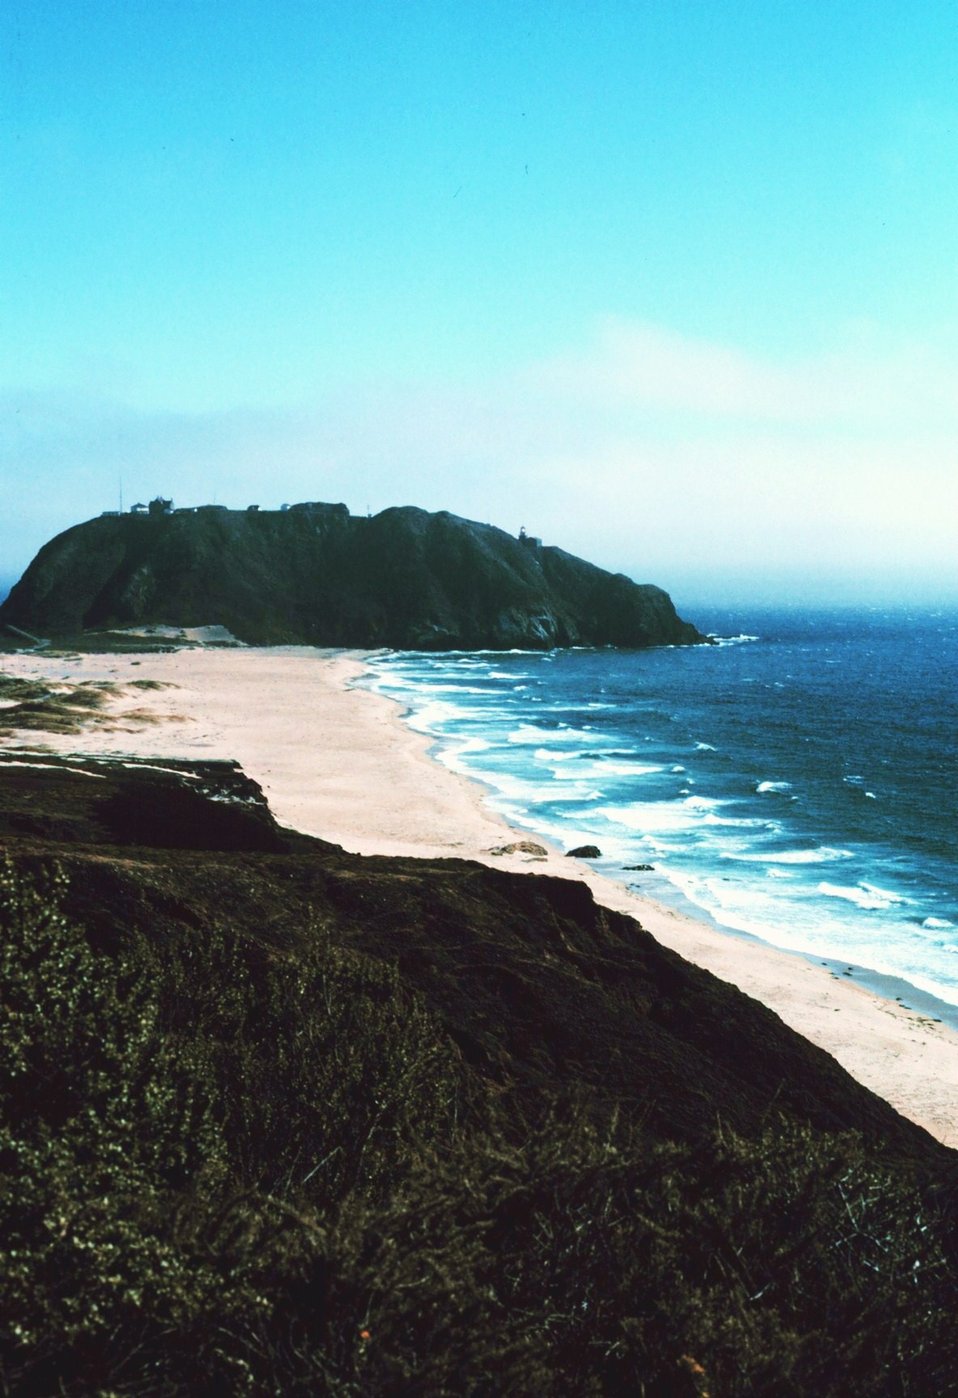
Point Sur, connected to the mainland by a narrow sand beach. Point Sur Lighthouse is on the right of the point.